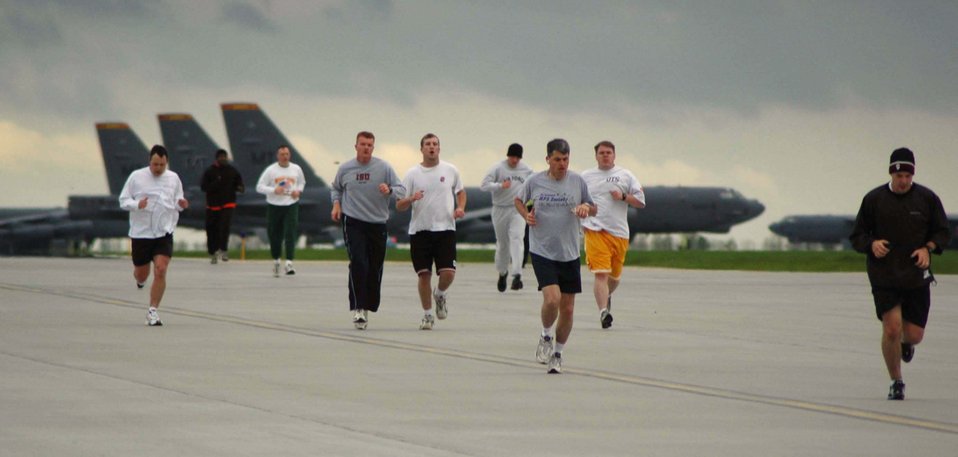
Run this way

MINOT AIR FORCE BASE, N.D. -- Airmen from across the base run past several B-52 Stratofortresses during a fun run on the runway here May 26. The runway is shut down until June 5 for maintenance.